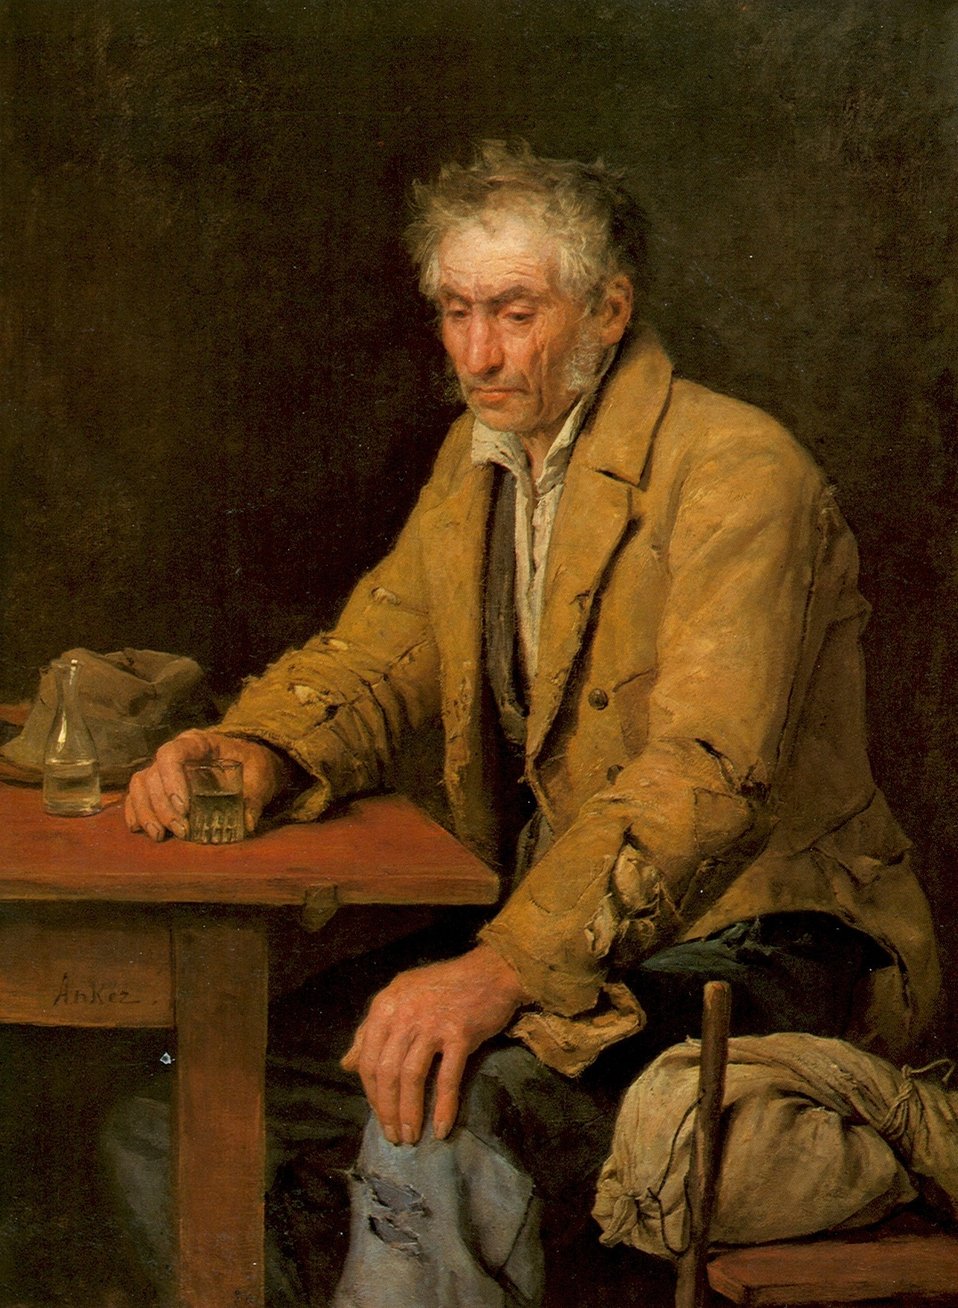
Anker Der Trinker 1868